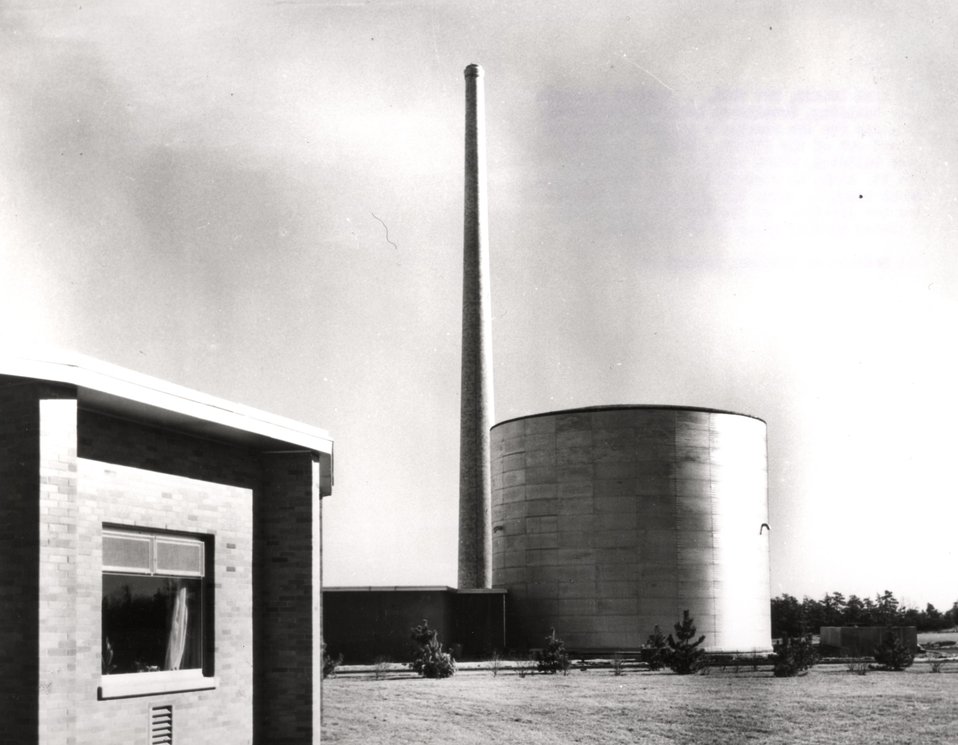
Medical research reactor building, Cooling air for the reactor's graphite reflector is forced out of the 150-foot stack. The steel reactor building, which is 60-feet in diameter and 54 feet high, is connected to the main medical research complex.
c.1960